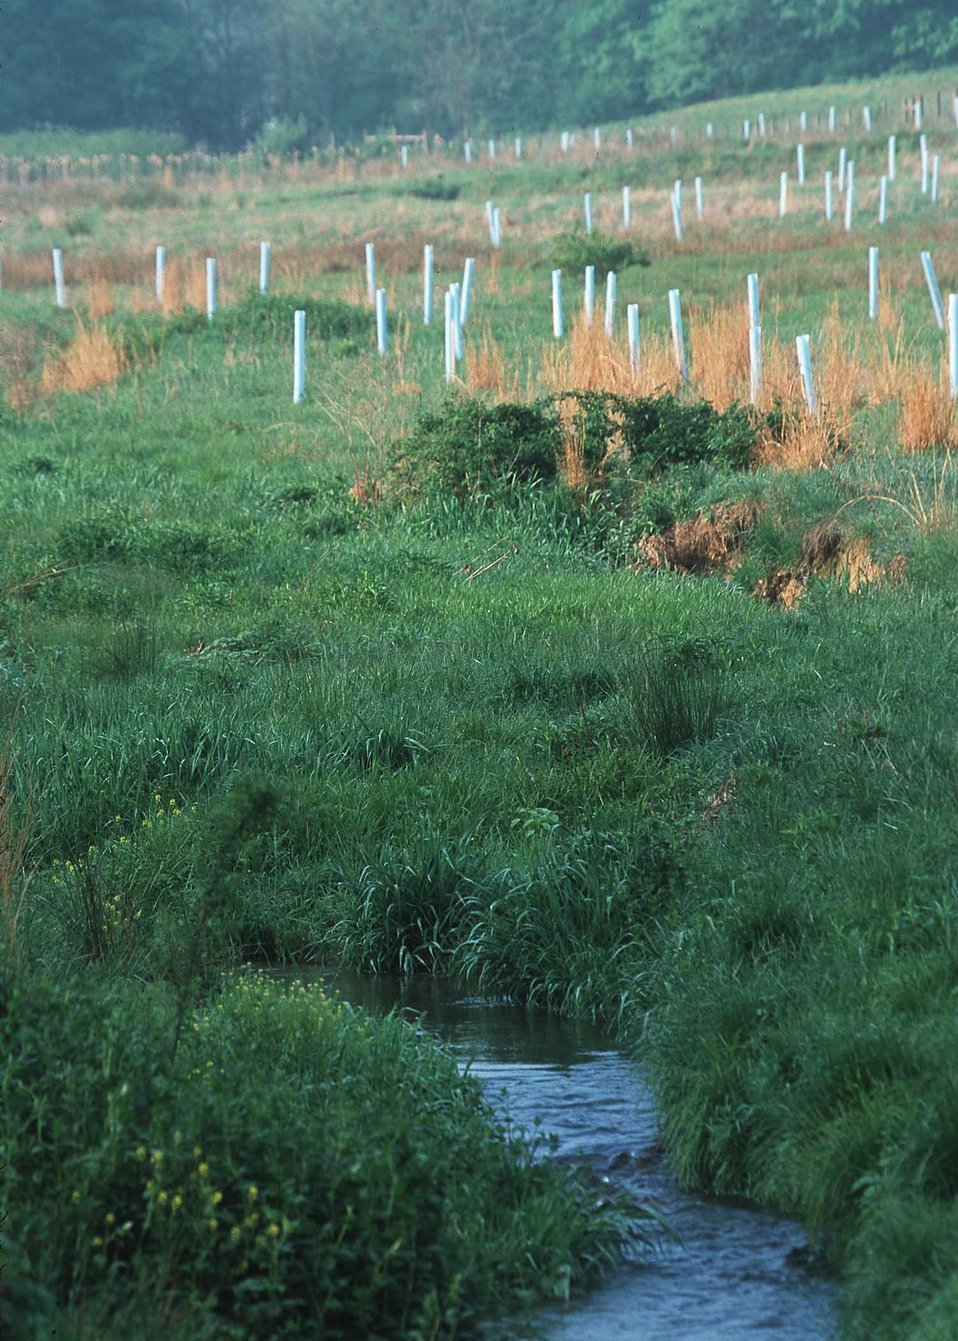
Wetland Reserve Program site showing tree planting and wetland restoration practices, Marion, Virginia.